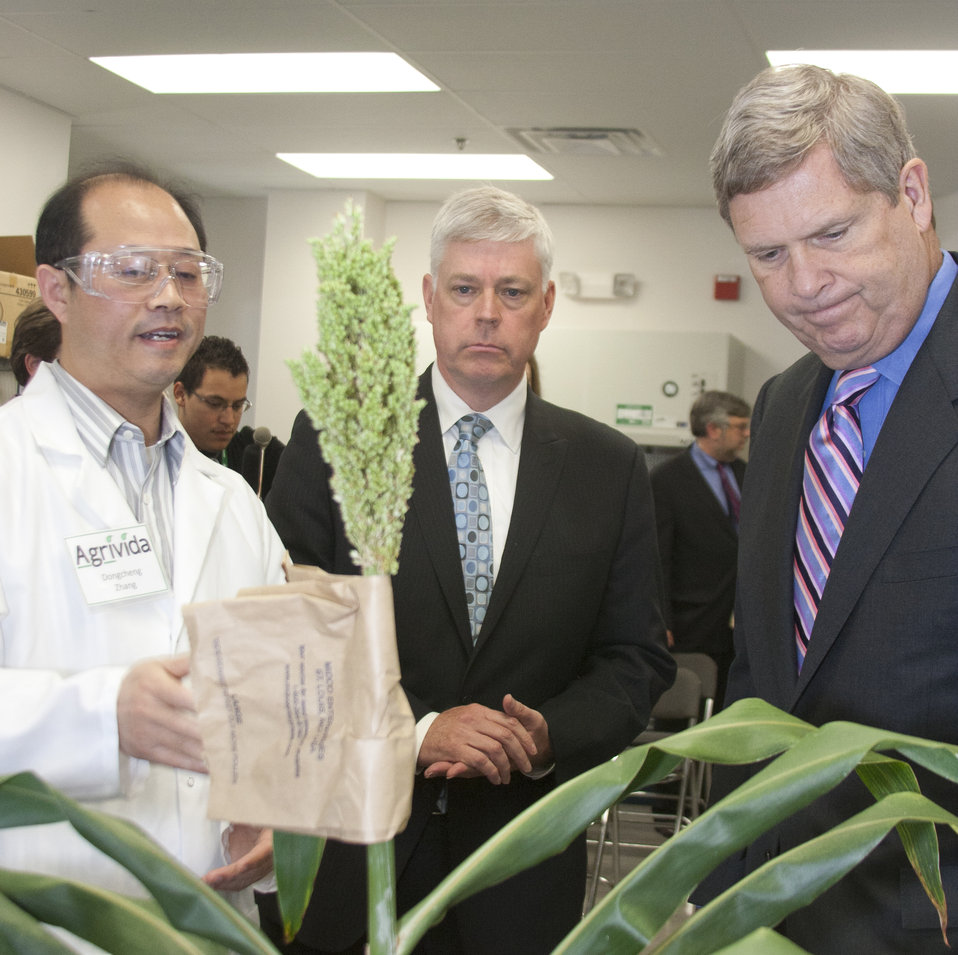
Agriculture Secretary Tom Vilsack visited Agrivida Inc., in Medford, MA, on Friday, May13, 2011. Agivida Inc. is a local company involved in developing new technologies to produce the next generation of biofuels, which will support economic development in rural America. Agrivida is developing methods to reduce the cost of converting biofuel feedstocks into sugar, focusing on sorghum, corn stover, and switchgrass. Agrivida scientist Dongcheng Zhano (left) shows Secretary Vilsack (right) a transgenic sorghum plant injected with enzymes to produce more sugar.